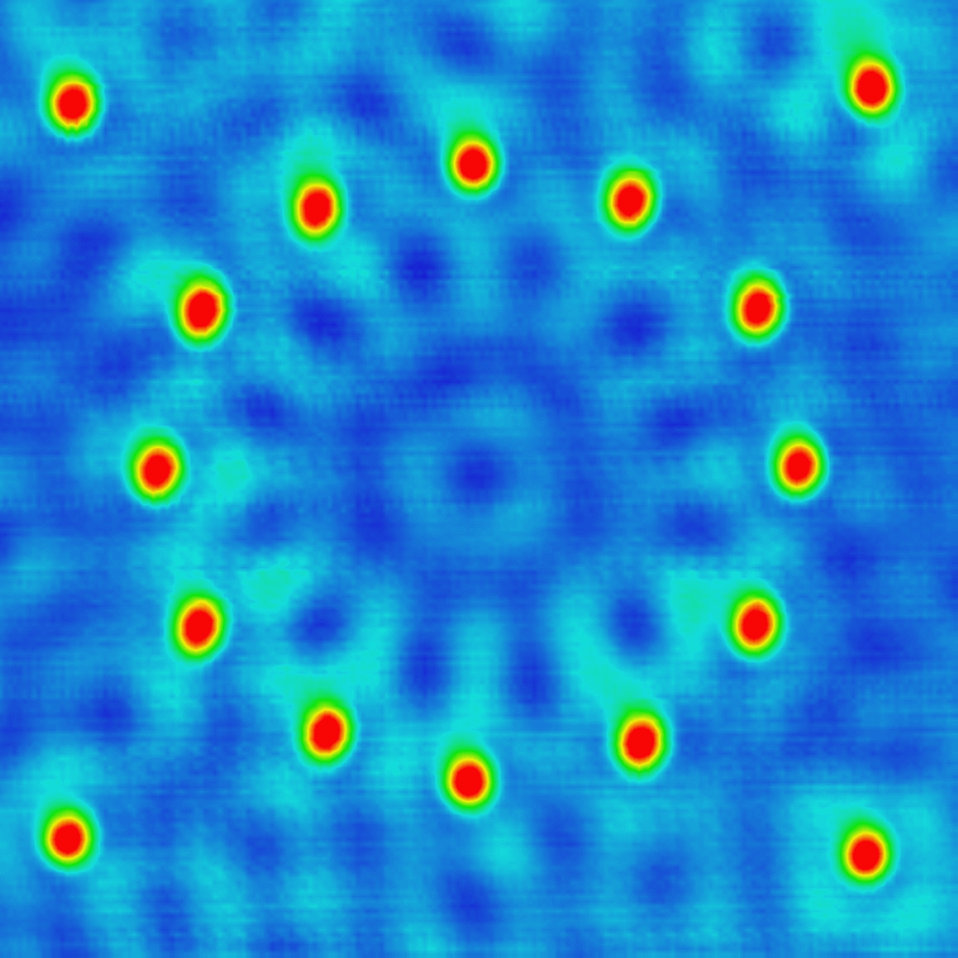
Quantum Daisy

Twelve cobalt atoms arranged in a circle on a surface of copper produce a daisy-like pattern from the interference of electron wave. This image was made with a one-of-a-kind instrument that, acting autonomously, picks up and places individual atoms anywhere on a surface. NIST scientists are studying the quantum properties of different atom arrangements to help improve the design and fabrication of nanoscale devices.